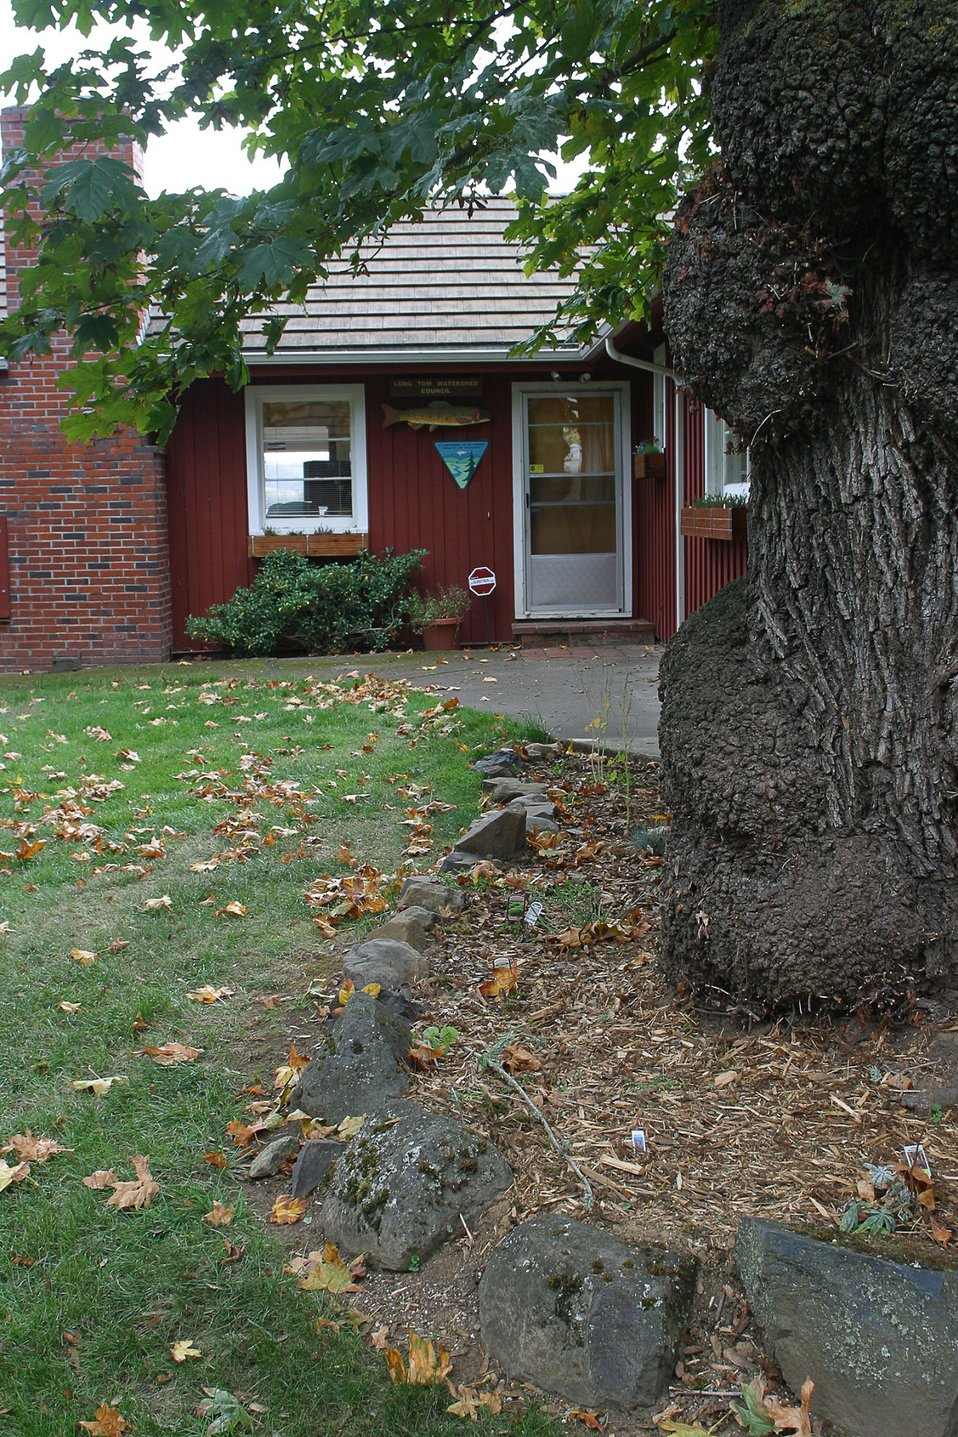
BLM's West Eugene Wetlands Project Office is centrally located near the Amazon and Willow Creek confluence in West Eugene.